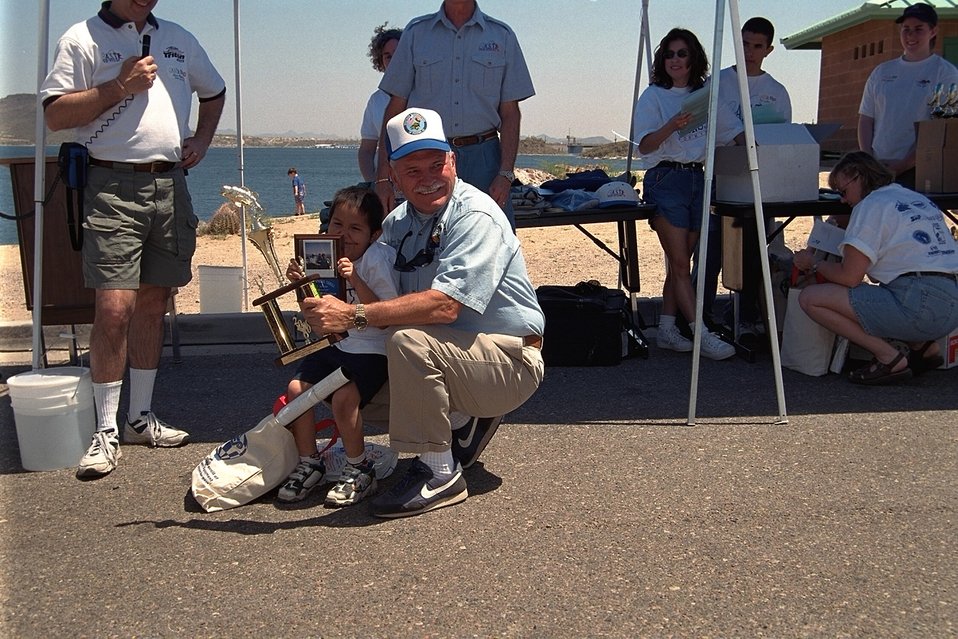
Everyone has a great time at Catch A Special Thrill (CAST), a day of fishing at Lake Pleasant for disabled children.